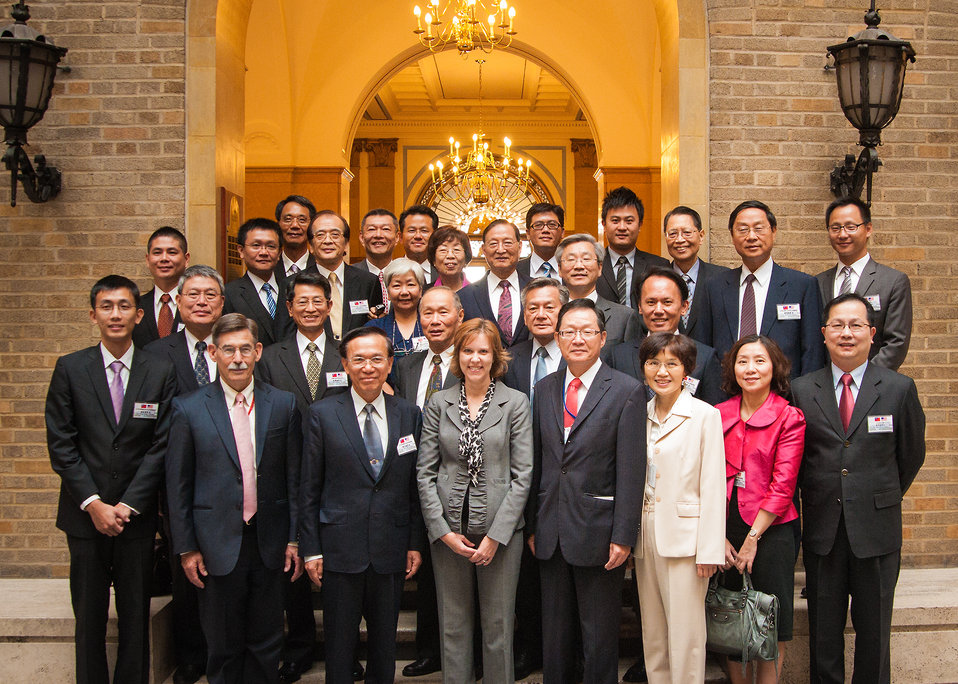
Deputy Undersecretary, Farm and Foreign Agricultural Services (FFAS) Darcy Vetter with representatives of the Taiwan 2013 Goodwill Trade Mission to the United States Department of Agriculture in Washington, DC, Mon. Sept. 9, 2013.